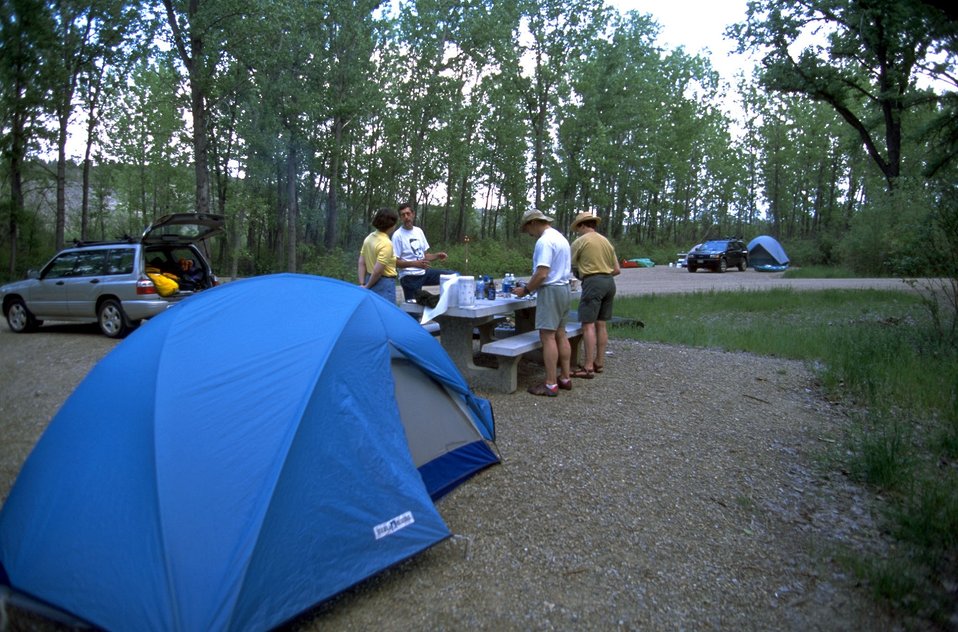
Tents and picnic area at Kipp Recreation Site